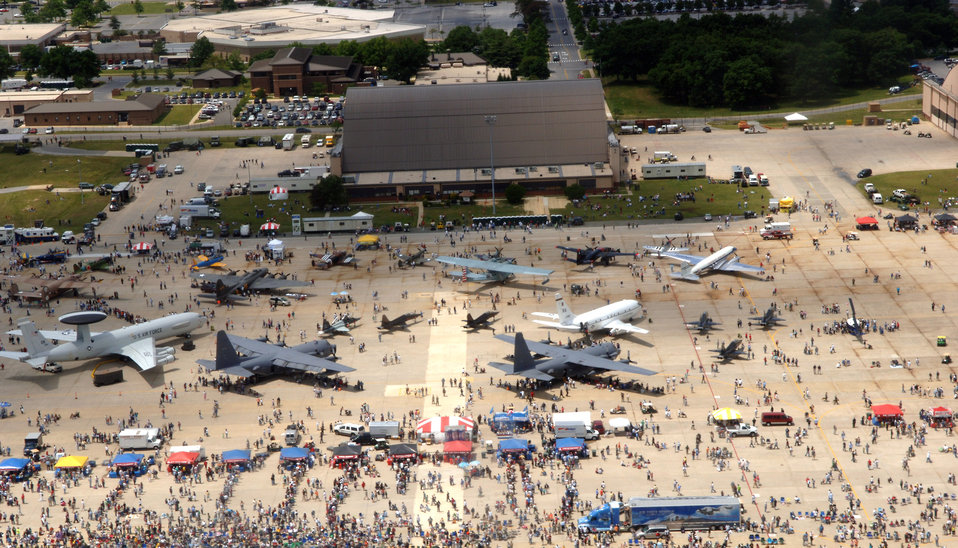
2006 Joint Service Open House

Andrews Air Force Base, Md., was the site of the 56th annual Department of Defense 2006 Joint Service Open House on Saturday, May 20, 2006. The three-day event highlighted American aviators, aircraft and technology.